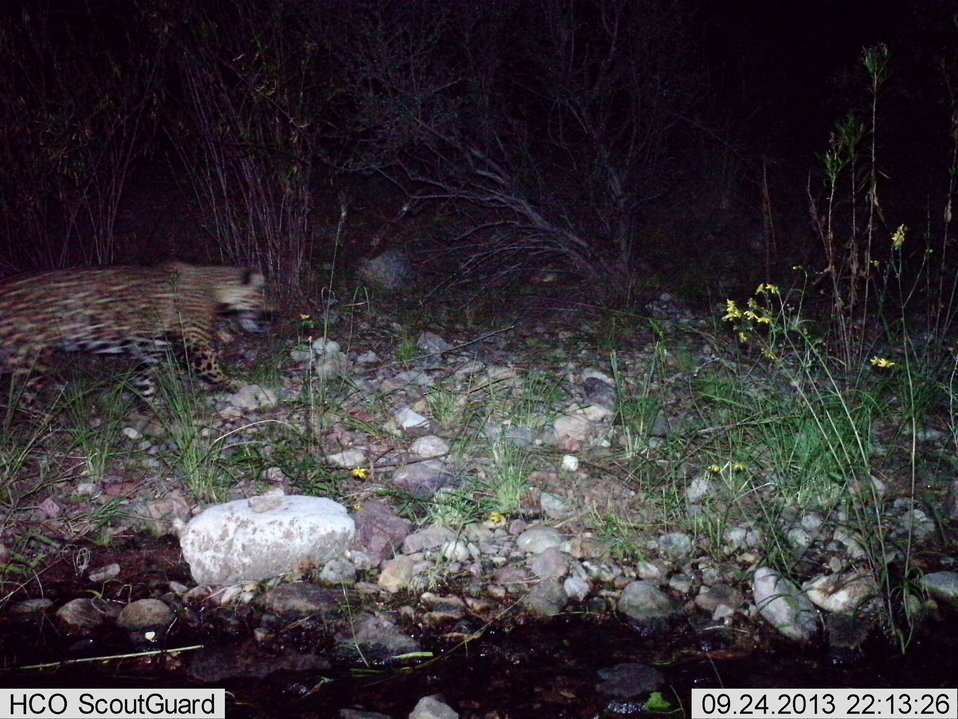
Male jaguar photographed by automatic wildlife cameras in the Santa Rita Mountains on September 24, 2013, as part of a U.S. Fish and Wildlife Service/Department of Homeland Security-funded jaguar survey conducted by University of Arizona. This photo was taken at a new location.